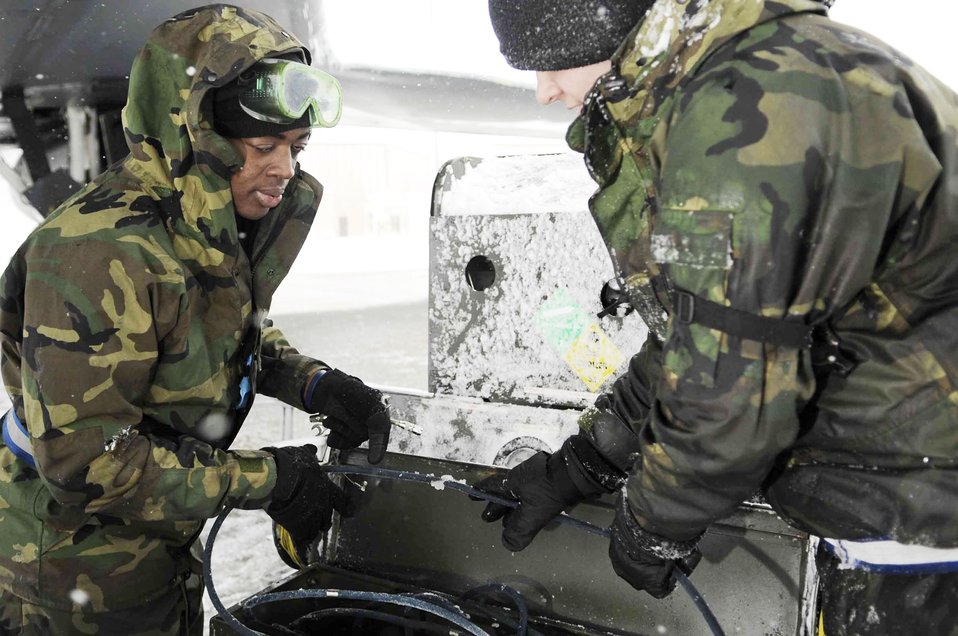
Cold and snow no obstacle for Ellsworth maintainers

Airmen 1st Class Samuel Carr (left) and Christopher Price, 28th Aircraft Maintenance Squadron crew chiefs, put away a gaseous oxygen system Oct. 29, 2009, on the Ellsworth Air Force Base, S.D. flightline. The gaseous oxygen system provides oxygen for aircrew use at high altitudes.